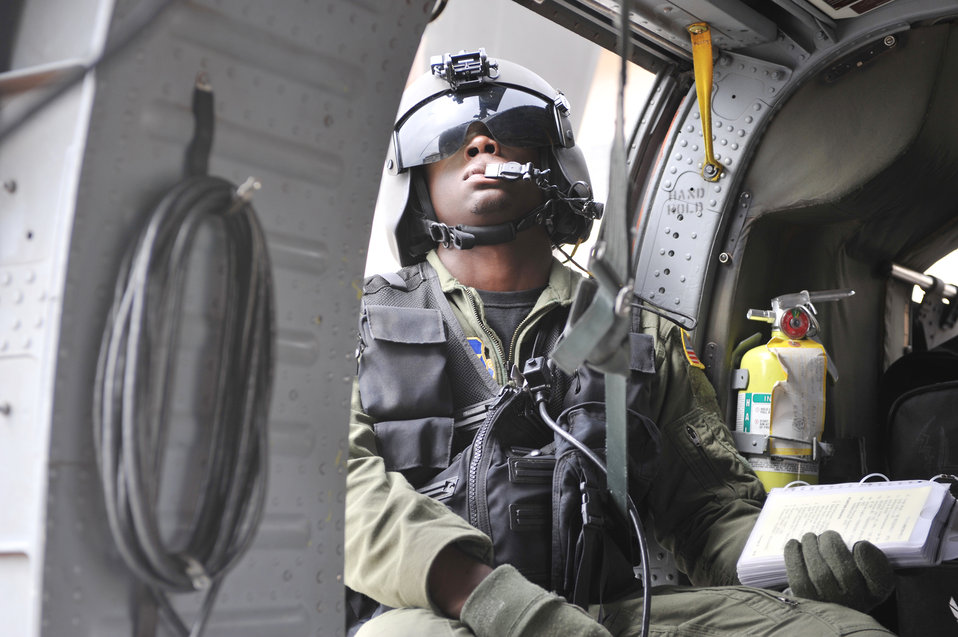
Helicopter crews train at Kirtland AFB

Student gunner Airman 1st Class Sanquez Lee checks the main rotor during engine start up on a HH-60G Pave Hawk Aug. 25, 2009 at Kirtland Air Force Base, N.M. Airman Lee is assigned to the 58th Training Squadron.